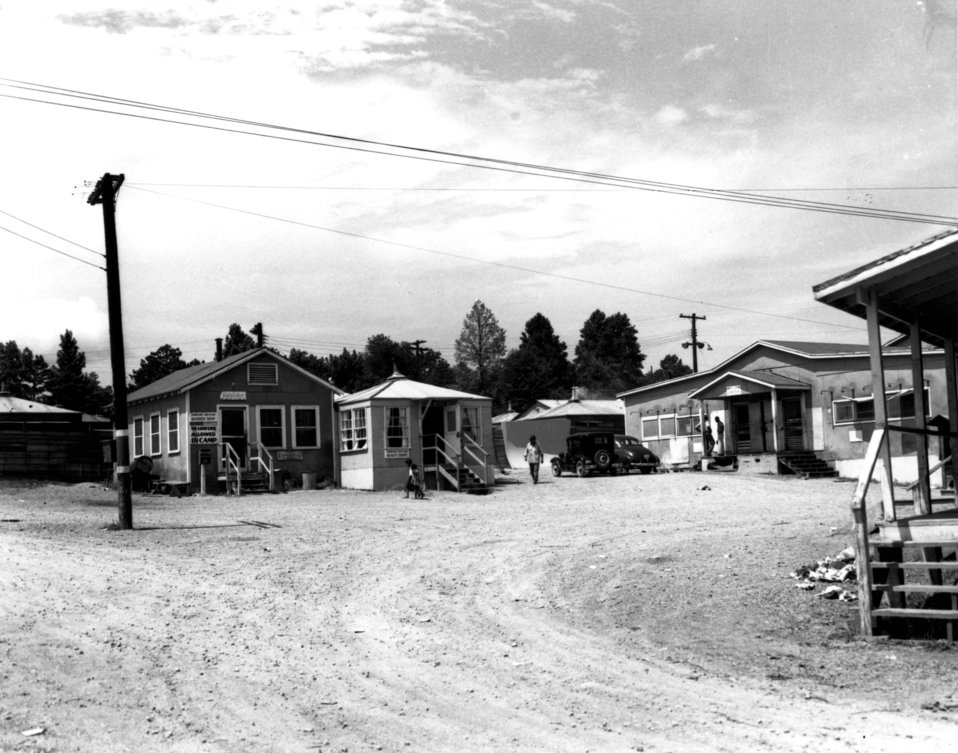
Business activity at Oak Ridge